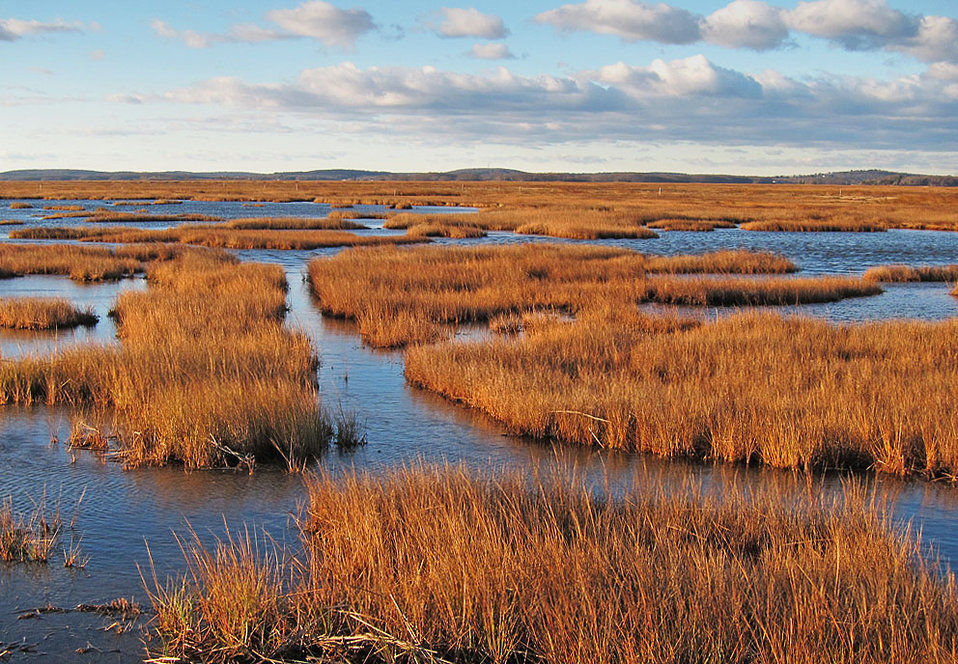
Marsh

Parker River National Wildlife Refuge, MA.